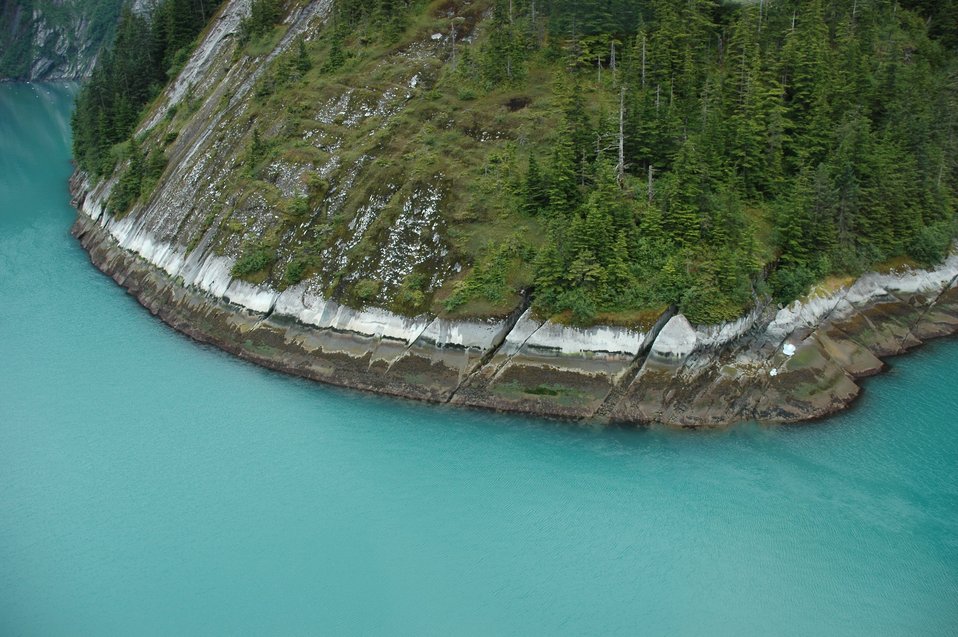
Aerial photograph. Multi-colored shoreline in Tracy Arm showing erosion pattern following the joint pattern in the rocks.